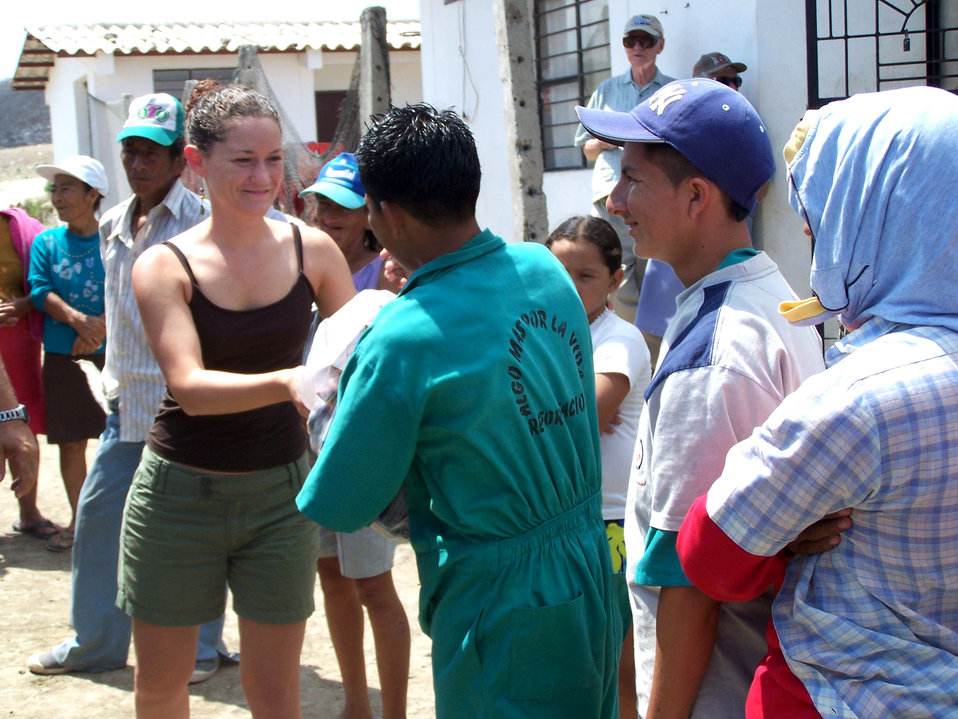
Airmen collect items for Manta community

First Lt. Emily Cole hands out compassion packages to residents of the Manta City Dump in Ecuador. She is assigned to the Air National Guard's 157th Air Refueling Wing at Pease, N.H.